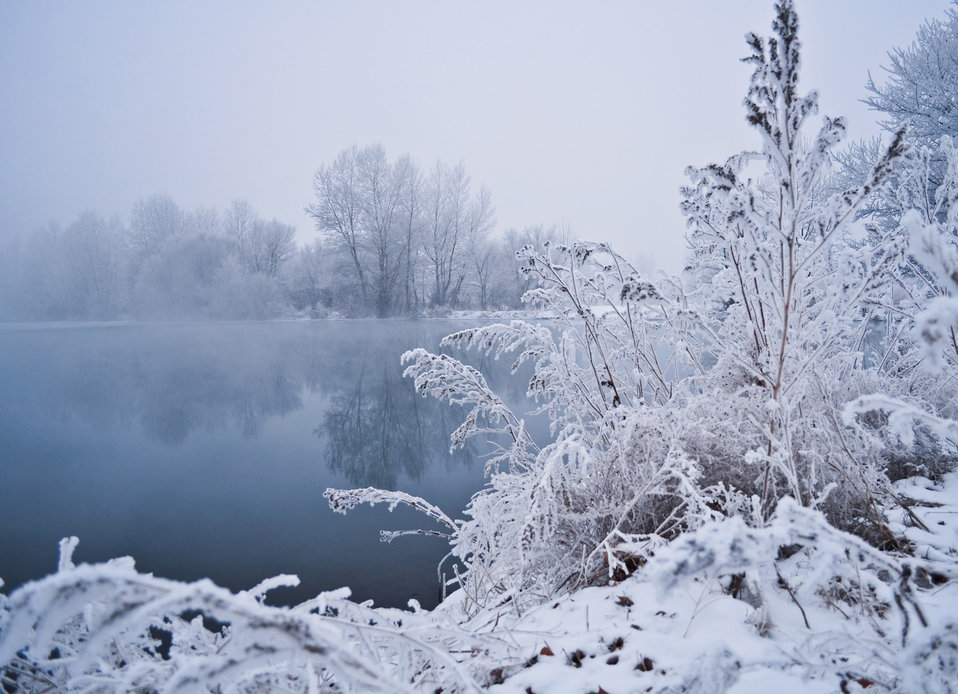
Winter fog

Rises above the water mist. winter 2011.